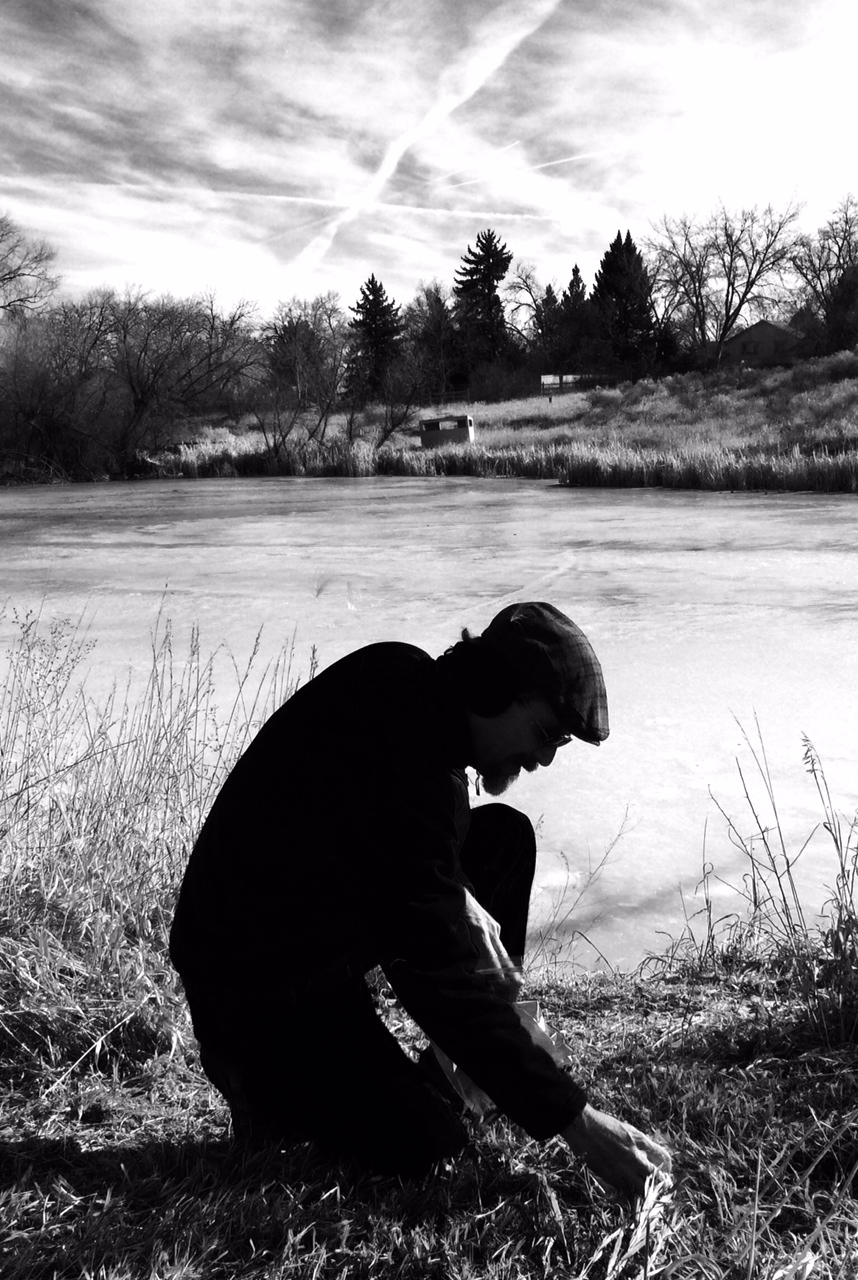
Milkman

A USFWS Volunteer planting Milkweed seeds at Two Ponds NWR in Arvada.